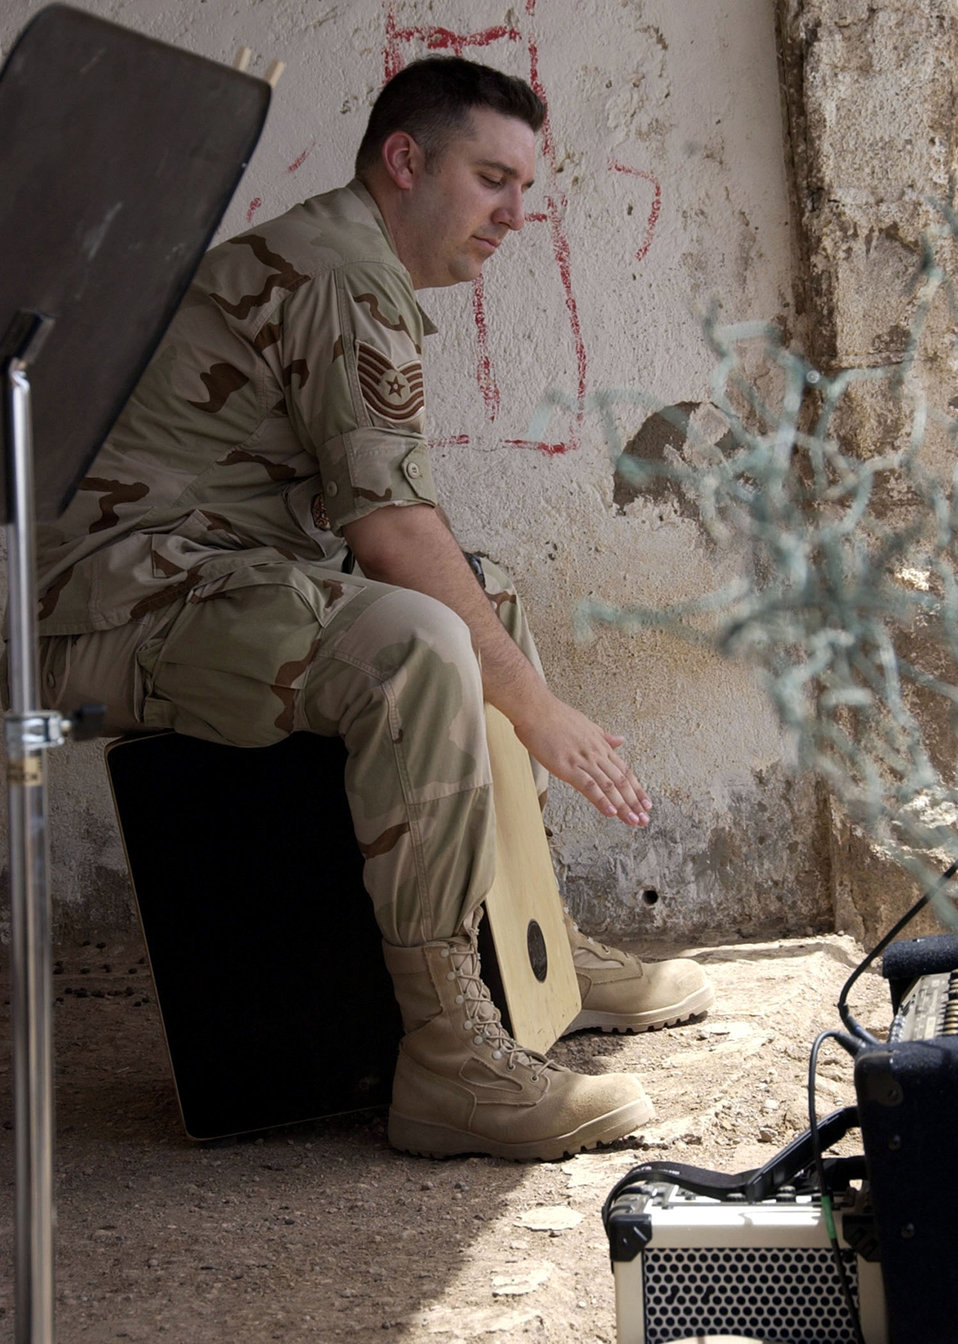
Band Brothers: Family of musicians rock AOR

Tech. Sgt. Joe Filipek keeps the beat during a small concert in the Djiboutian village of Nagad in June. Sergeant Filipek and the other musicians were deployed as the Central Air Forces band